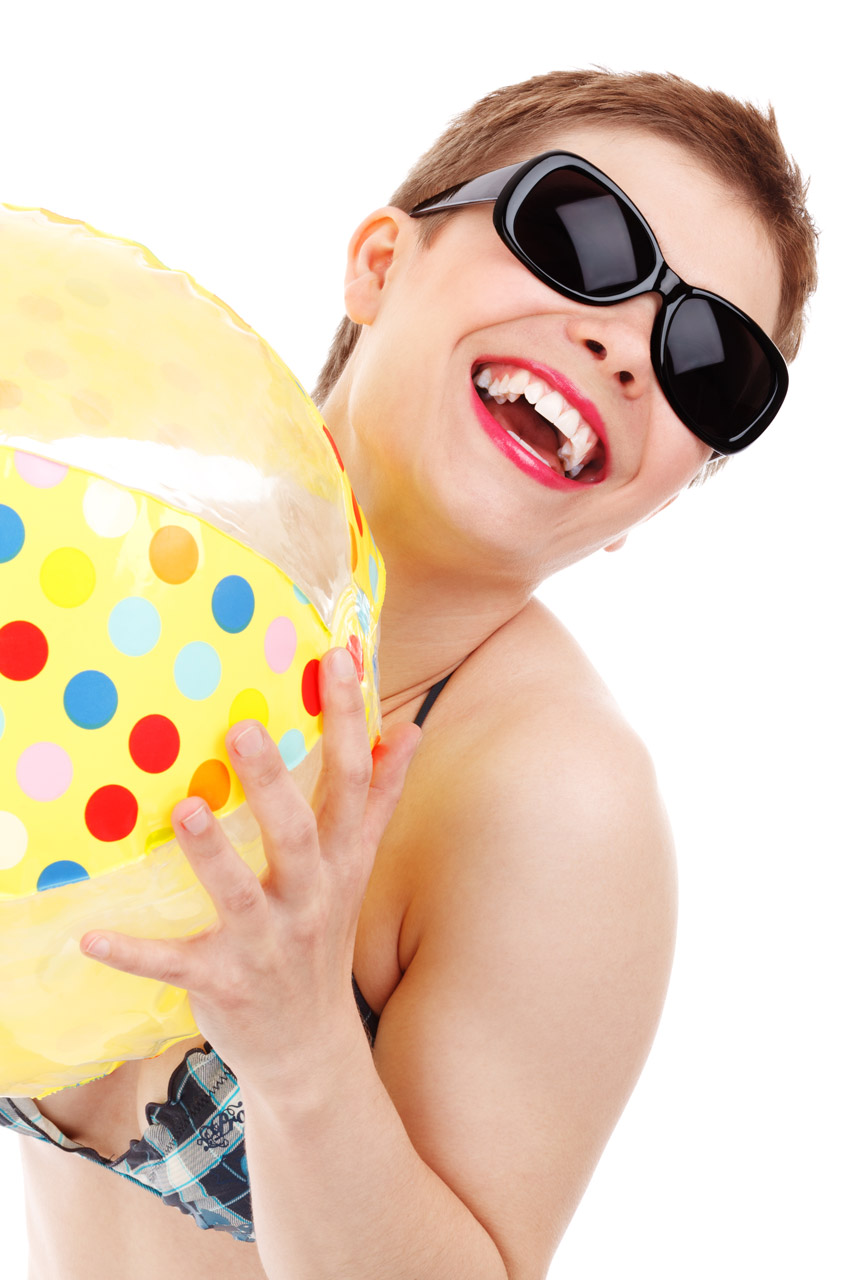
Happy girl in swimwear

Young woman laughing with a yellow dotted beach ball isolated on white background.